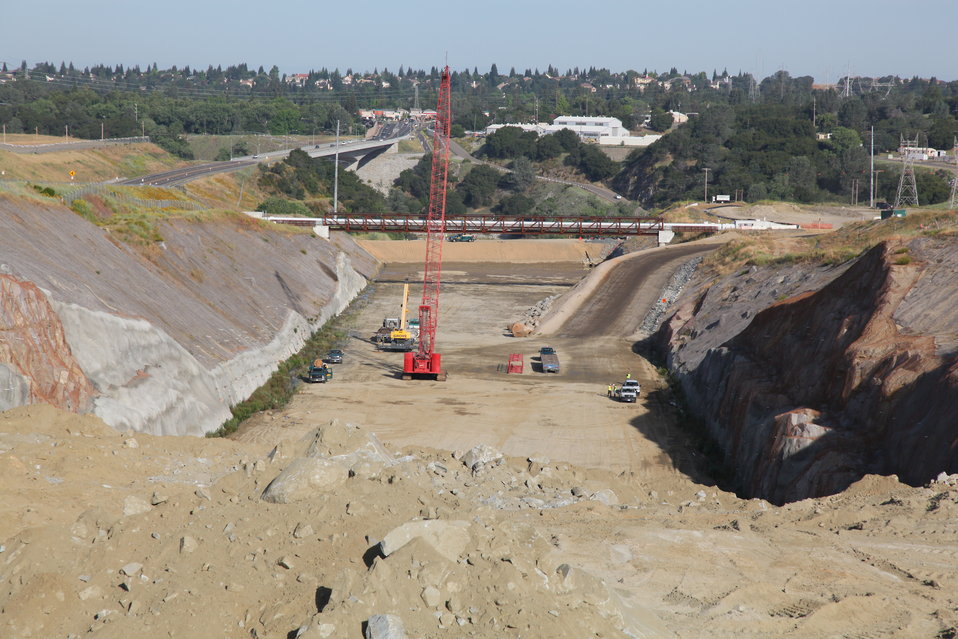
Excavating Folsom Dam’s auxiliary spillway

Excavation of the auxiliary spillway at Folsom Dam in Folsom, Calif., continues June 16, 2011. The spillway will let Folsom Dam release water sooner and more safely. The project is part of the Folsom Dam Joint Federal Project, a joint effort of the U.S. Army Corps of Engineers Sacramento District, the U.S. Bureau of Reclamation, the Central Valley Flood Protection Board and the Sacramento Area Flood Control Agency to improve the safety of the dam and reduce flood risk for the greater Sacramento area.